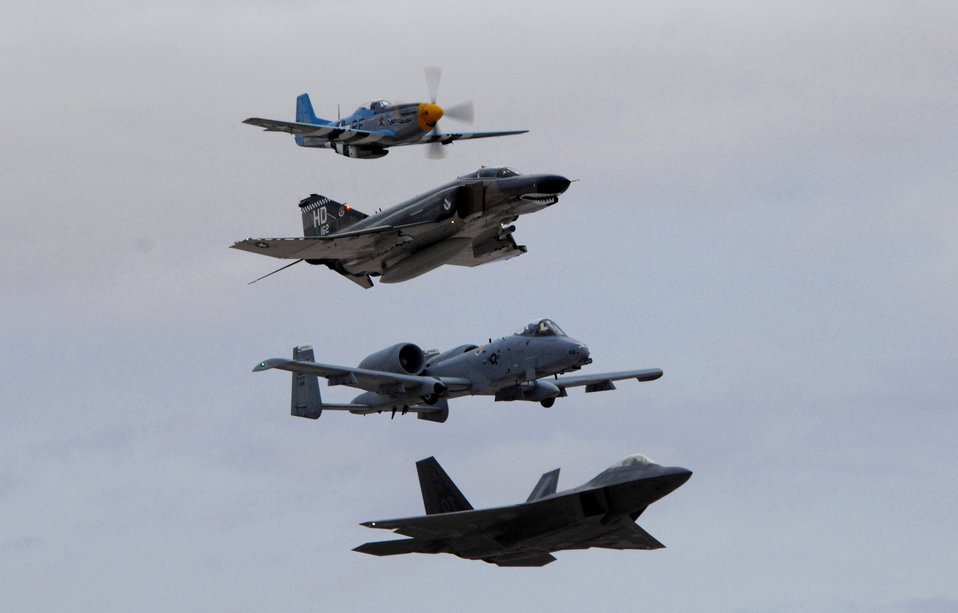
It's an aviation nation

A P-51 Mustang, F-4 Phantom, A-10 Thunderbolt II and an F-22 Raptor perform the Heritage Flight during the closing of the Aviation Nation Air Show Nov. 11 at Nellis Air Force Base, Nev. Aviation Nation is one of the largest air shows in North America. This year's show commemorated 60 years of airpower and was the capstone event of the Air Force's yearlong 60th anniversary celebration.